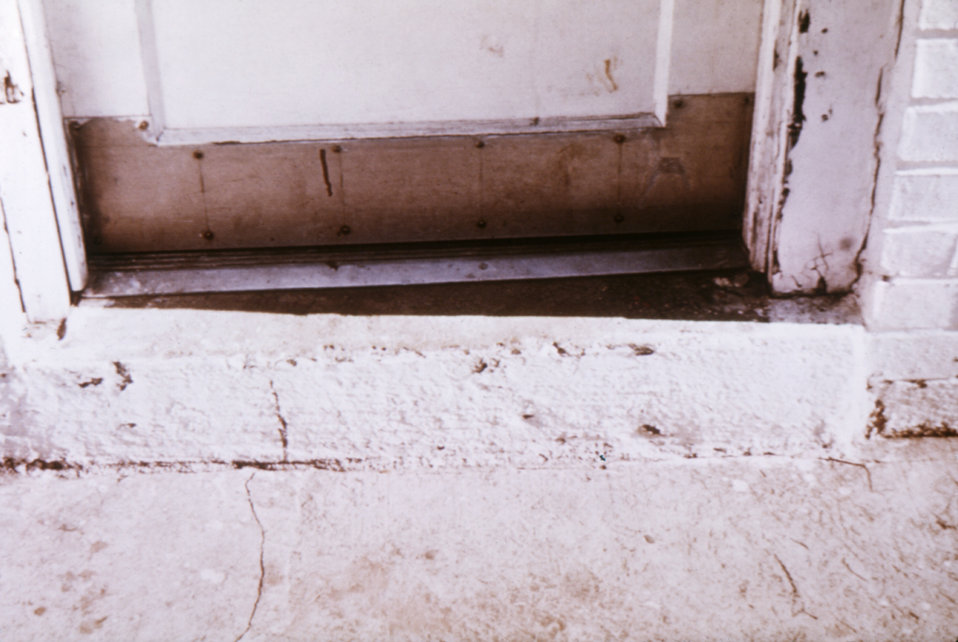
This metal door threshold of a migrant worker camp food delivery entrance was installed in order to prevent a rat infestation.